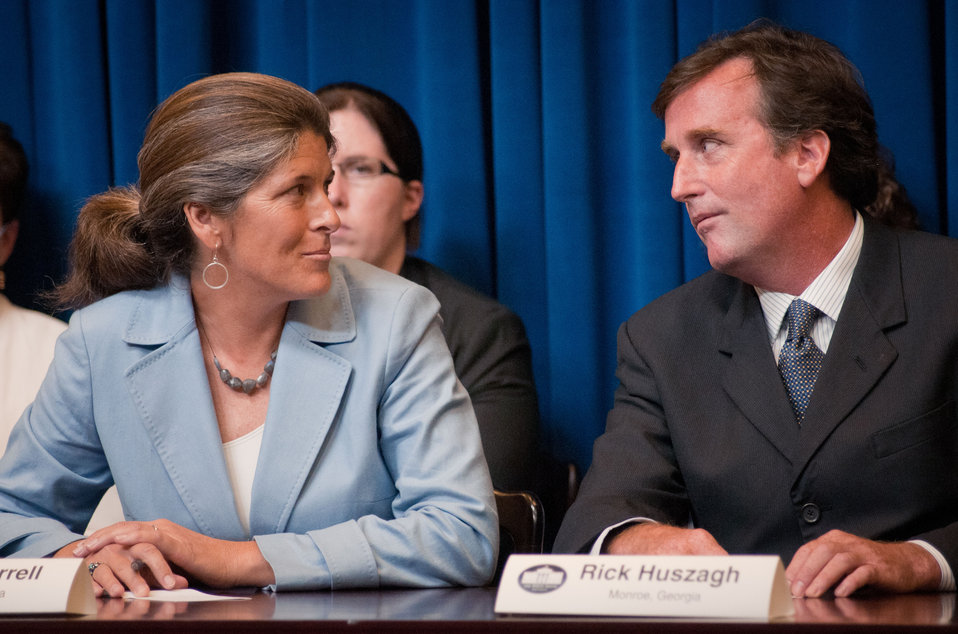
Rick Huszagh (right) and Crista Carrell, Down to Earth Energy, GA, attended a meeting at the White House, in Washington, DC, on July 6, 2011. They were asked to participate along with President Barack Obama, Agriculture Secretary Tom Vilsack, the President's Domestic Policy Adviser Melody Barnes and rural communities leaders from across the country for the White House Rural Champions of Change event to strengthen rural communities and promote economic growth. When Rick Huszagh and Crista Carrell purchased part of her family’s farm in 1995, their focus was on farmland preservation as much as the creation of a successful business enterprise. Mountain Creek Farm started out selling Boer goats to purebred and commercial breeders and Bermuda hay to neighboring horse farms. Goat kids were raised each spring to sell for breeding stock or meat. The couple improved their farm marketing by participating in shows, performance tests, and field days. The farm’s proximity to the University of Georgia facilitated their involvement in herd management studies related to the control of internal parasites. They took full advantage of resources offered by the Cooperative Extension Service and the Natural Resources Conservation Service, and participated in the Environmental Quality Incentives Program (EQIP). Rick and Crista’s interest in sustainability issues on the farm led them to research and implement small-scale biodiesel production for the tractors in 2005. In 2006, they intensified their renewable energy involvement when they were awarded a Renewable Energy for America Program (REAP) grant and USDA guaranteed loan. Along with like-minded partners, they established Down to Earth Energy, a commercial biodiesel production facility located adjacent to the farm. Concern with some of the inefficiencies in the biodiesel process led them to partner with the University of Georgia to develop a more effective catalyst. The concept was further funded by an EPA Small Business Innovation Research Grant (SBIR) and a Venturelab grant. Crista was appointed a Walton County Soil and Water Conservation District Supervisor in 2006. She has spearheaded the district’s sponsorship of community forestry activities in Monroe and served as the coordinator of Atha Road Elementary School’s outdoor classroom from 2003-2011. Her work as a district supervisor led to her being hired as the first full-time Executive Director of the Georgia Association of Conservation District Supervisors (GACDS) in 2007.